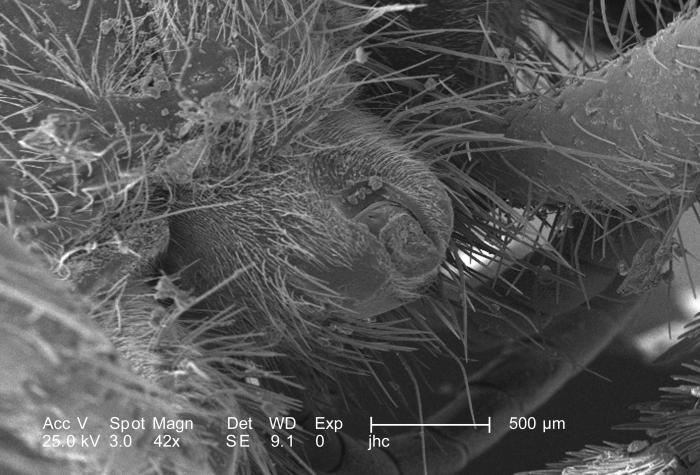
Under a low magnification of 42X this scanning electron micrograph (SEM) revealed the morphologic details of a female velvet wasp's, Dasymutilla sp., distal abdomen were revealed from which her stinger will emerge when she's threatened. See PHIL 9894, which depicts a female velvet ant's stinger fully exposed after having been coxed from the abdomen prior to processing. Note the presence of sensorial 'hairs' upon the surface of the exoskeleton, which are really not hairs as in the mammalian sense, i.e., composed of keratin, but chitinous extensions composed of the same protein as that of the exoskeleton itself.